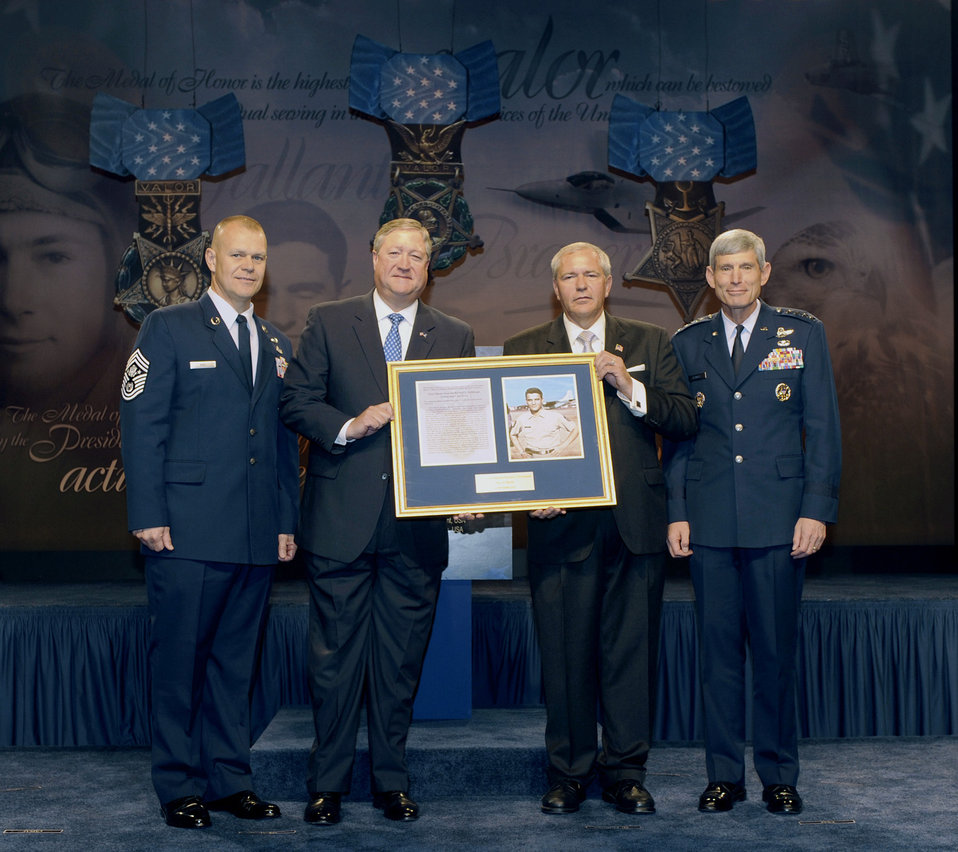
Hall of Heroes

(From left) Chief Master Sgt. of the Air Force James A. Roy, Secretary of the Air Force Michael Donley, Cory Etchberger, son of Medal of Honor recipient Chief Master Sgt. Richard L. Etchberger, and Air Force Chief of Staff Gen. Norton Schwartz display a framed copy of Chief Etchberger's Medal of Honor citation during a Pentagon Hall of Heroes induction ceremony Sept. 22, 2010, in the Pentagon.